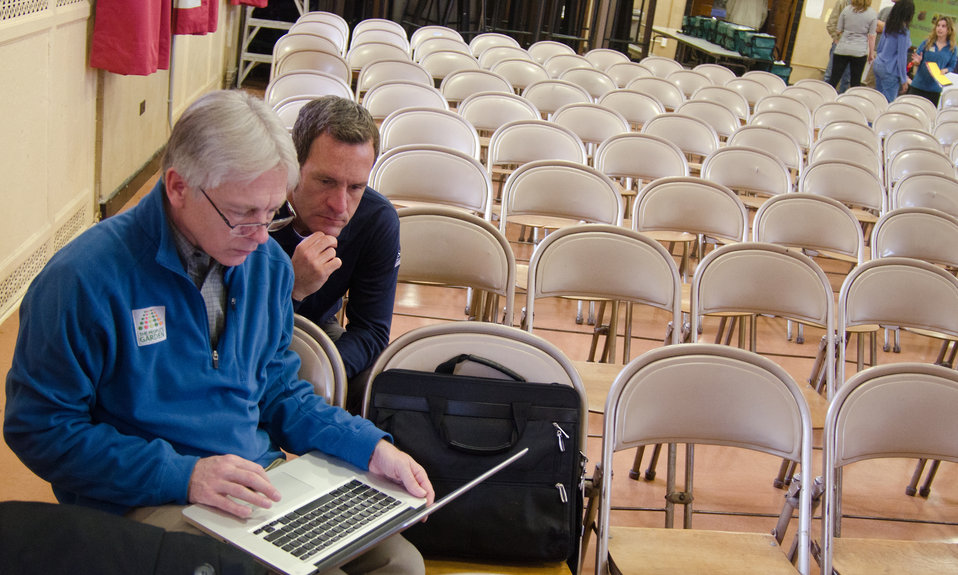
The People’s Garden team architects Bob Sneickus (left) and Matt Arnn work together to put the finishing touches on a presentation on the School Garden Design Concept for the parents and students of W. B. Powell Elementary School, Washington D.C., on Thursday, March 10, 2011. This People’s Garden team consists of the Washington Capitols, U.S. Department of Agriculture and D.C. Public Schools in Washington, D.C. Their presentation will support the 289 parents and students. The design draft was created by Forest Service landscape architect Matt Arnn, with the support of Natural Resources Conservation Service landscape architect Bob Sneickus, Outreach and Education Coordinator Annie Ceccarini and Project Manager Leslie Burks who worked with the Principal Janeece Docal and the school during an earlier visit to develop illustrated ideas from parents and students. Representing the Washington Capitols is Defenseman, Number: 52 Mike Green, Comcast SportsNet Analyst Alan May and Director of Community Relations Elizabeth Wodatch.